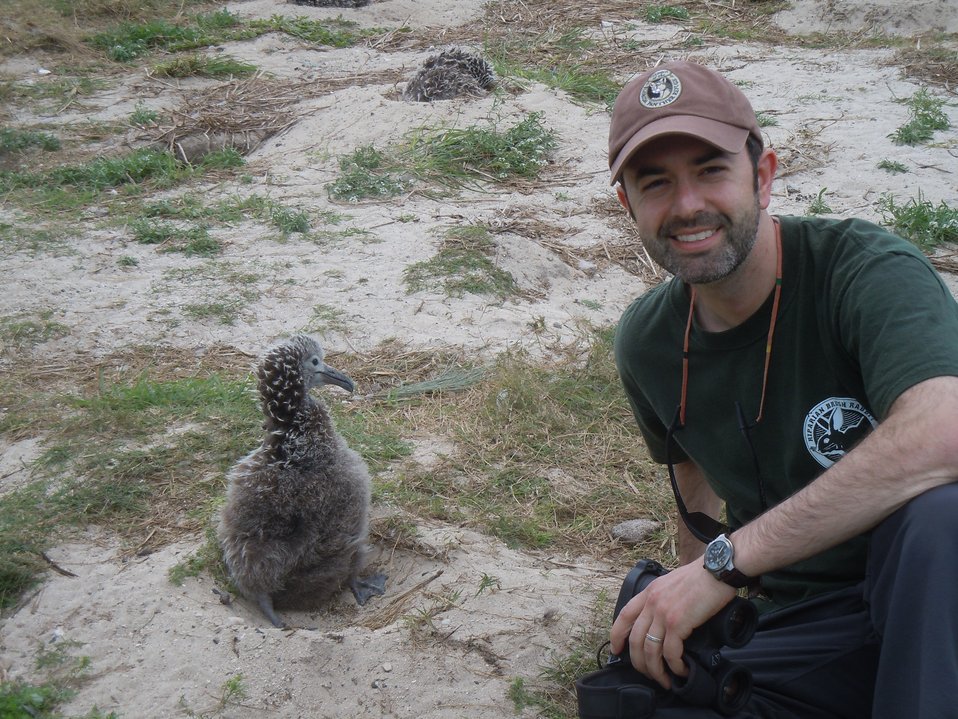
photographer Noah Kahn with albatross chick

Midway Atoll National Wildlife Refuge
March 2012